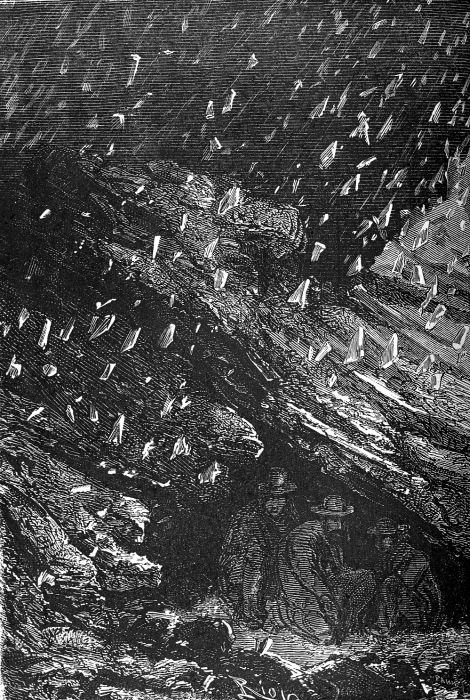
An ilustration from the novel 'In Search of the Castaways; or Captain Grant's Children' by Jules Verne drawn by Édouard Riou. Polski: Ilustracja powieści Juliusza Verne'a 'Dzieci kapitana Granta' autorstwa Édouarda Riou. Français : 'Les Enfants du capitaine Grant', Édouard Riou. Français : Une grêle d’une violence extrême.